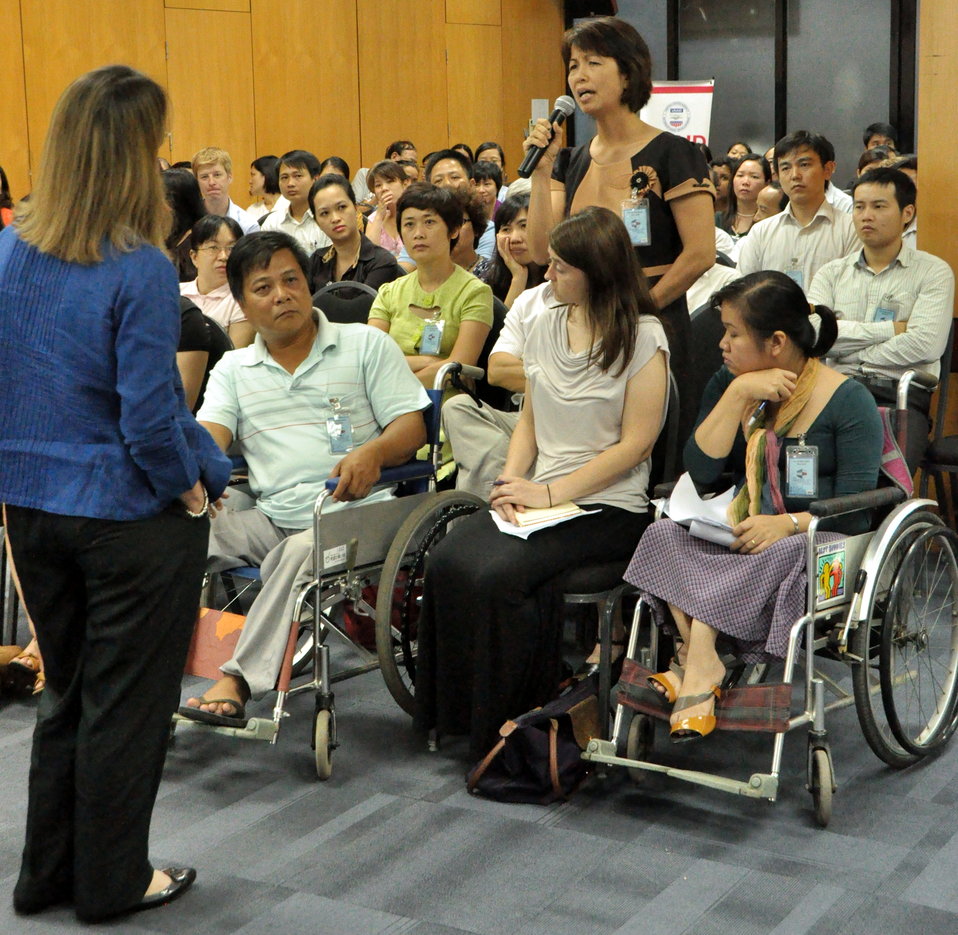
Development Grants Program Workshop in Hanoi

July 24, 2013